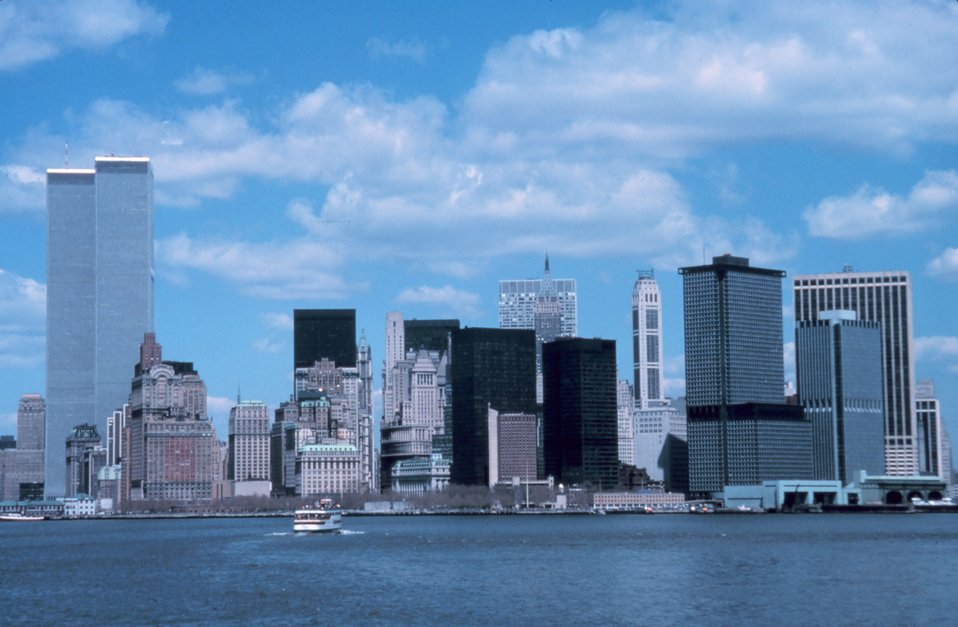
Manhattan skyline